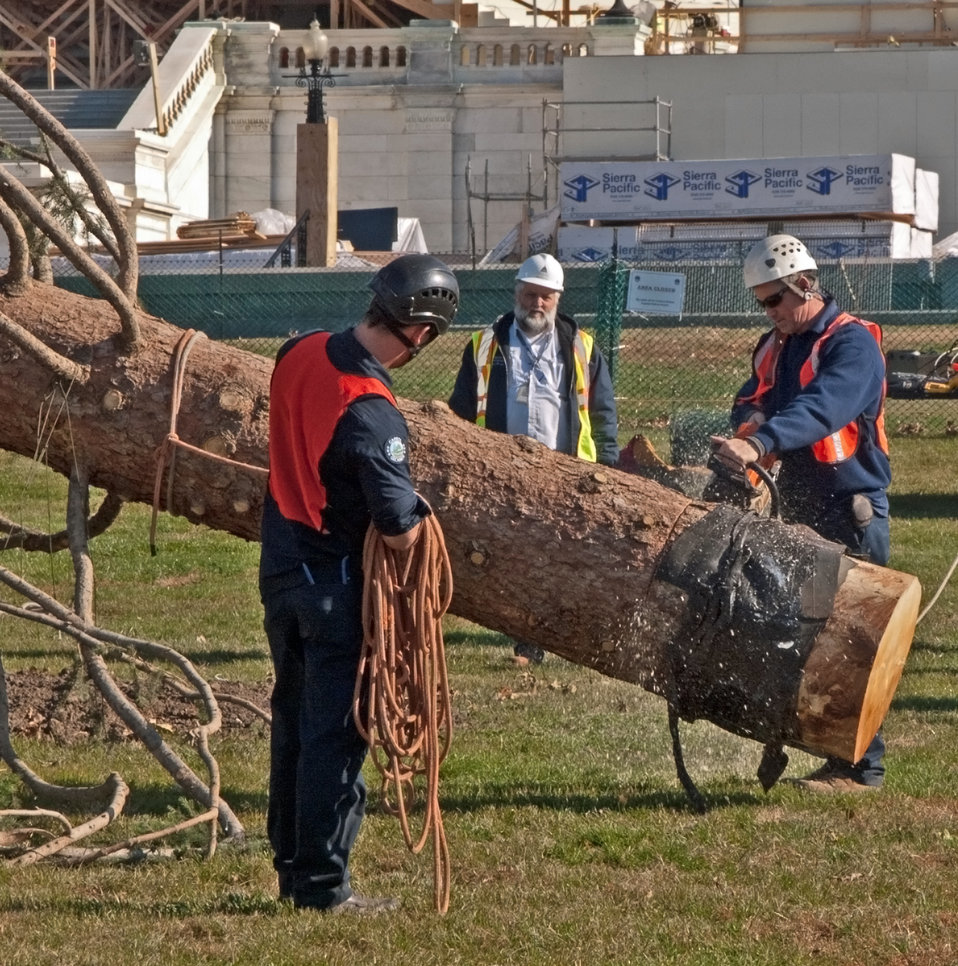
Members of the Capitol grounds crew cut down trunk of the the 2012 Capitol Christmas Tree in preparation of placing it on the Capitol grounds in Washington, D.C. on Nov.26, 2012. The 73-foot Englemann spruce traveled from the White River National Forest in Colorado.